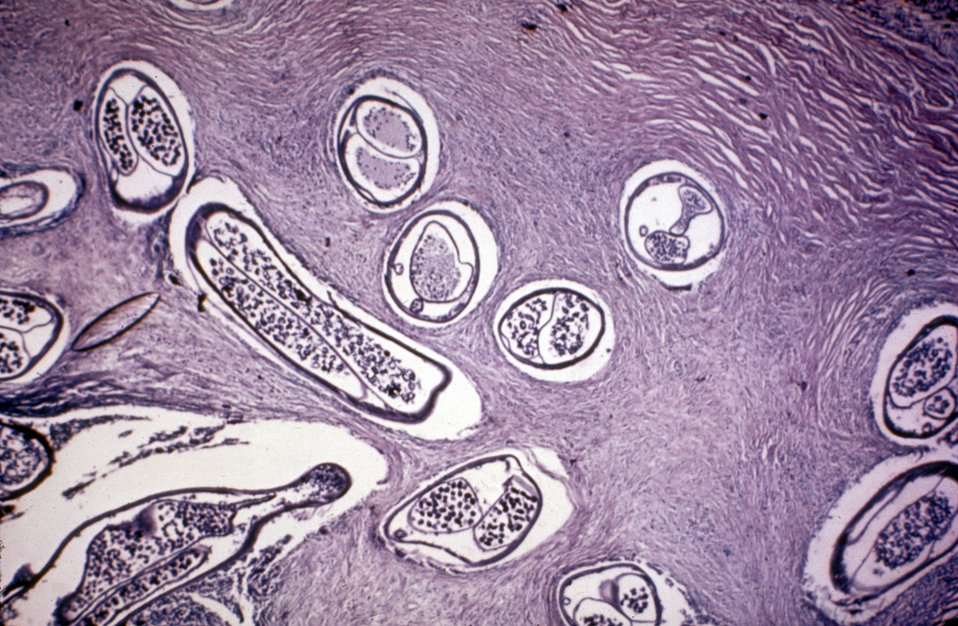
Histopathology of Onchocerca volvulus nodule. Onchocerciasis. Parasite.